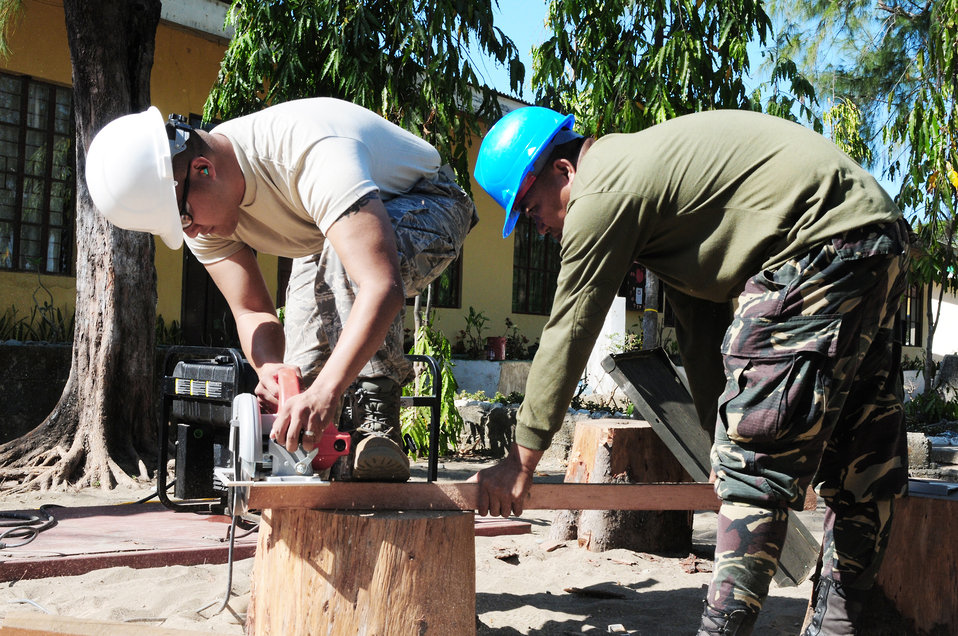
Pacific Angel engineering projects underway in Laoag

Tech. Sgt. Jimmy Tyquiengco and Philippine air force Staff Sgt. Ramil Catubay work on a construction project Feb. 14, 2010, during Operation Pacific Angel in Laoag, Philippines. Operation Pacific Angel is a joint and combined humanitarian assistance operation conducted in the Asia-Pacific region to provide medical, dental and engineering assistance. The exercise is scheduled through Feb. 22, 2010. Sergeant Tyquiengco is an engineer from the 254th Red Horse Squadron at Andersen Air Force Base, Guam. Sergaent Catubay is from the 356th Aviation Engineering Group, Armed Forces of the Philippines.